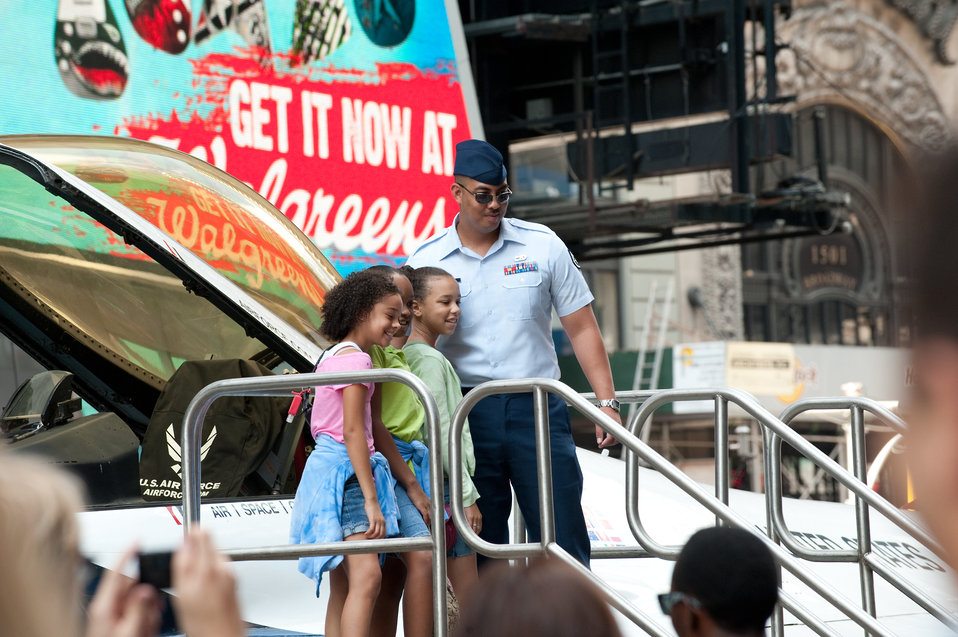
Air Force Week Now Showing in Times Square

Trinity Guterriez (left to right), Teia Torres and Maya Wright pose for a photo with Staff Sgt. Joseph Tapang in front of a display F-16 Fighting Falcon in Times Square during Air Force Week New York City Aug. 26, 2010.